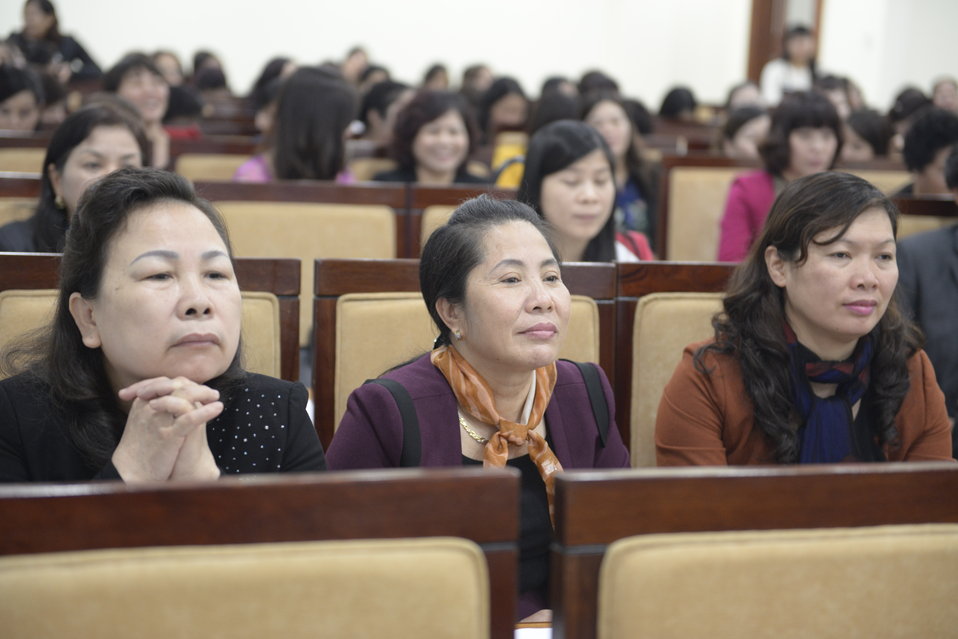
International Women's Day Seminar for female entrepreneurs

Phu Tho, Vietnam. March 1, 2014.